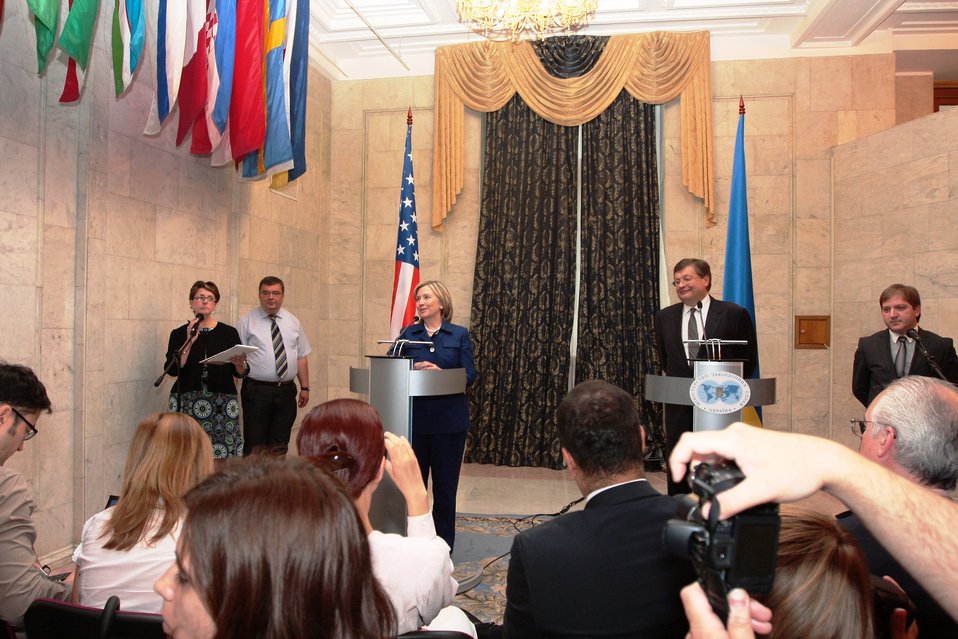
Secretary Clinton Meets With Ukrainian Foreign Minister

U.S. Secretary of State Hillary Rodham Clinton and Ukrainian Foreign Minister Kostyantyn Gryshchenko respond to questions at a joint press conference in Kyiv, Ukraine, on July 2, 2010.